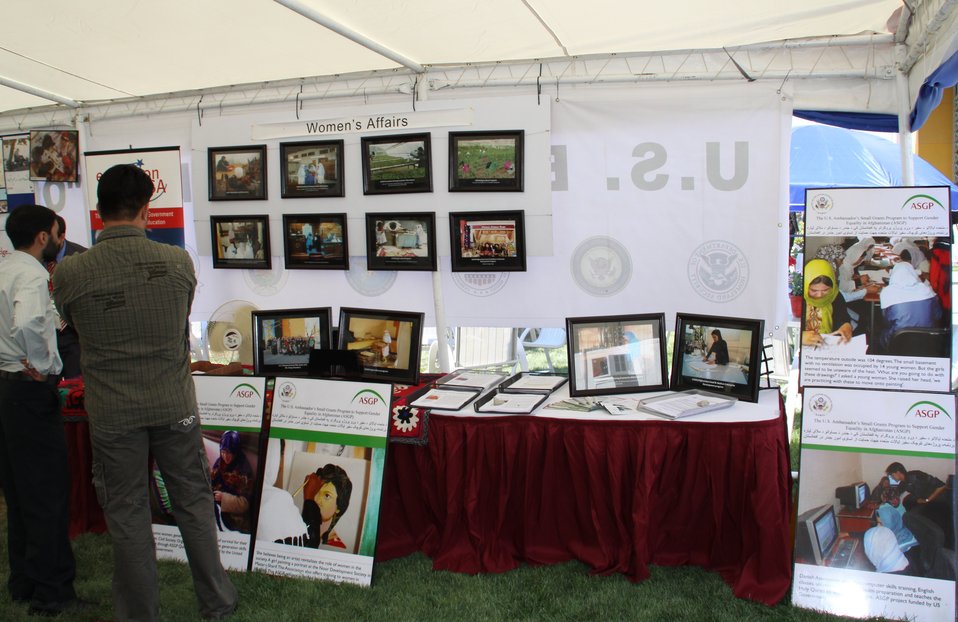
Kabul Official July 4th Celebration